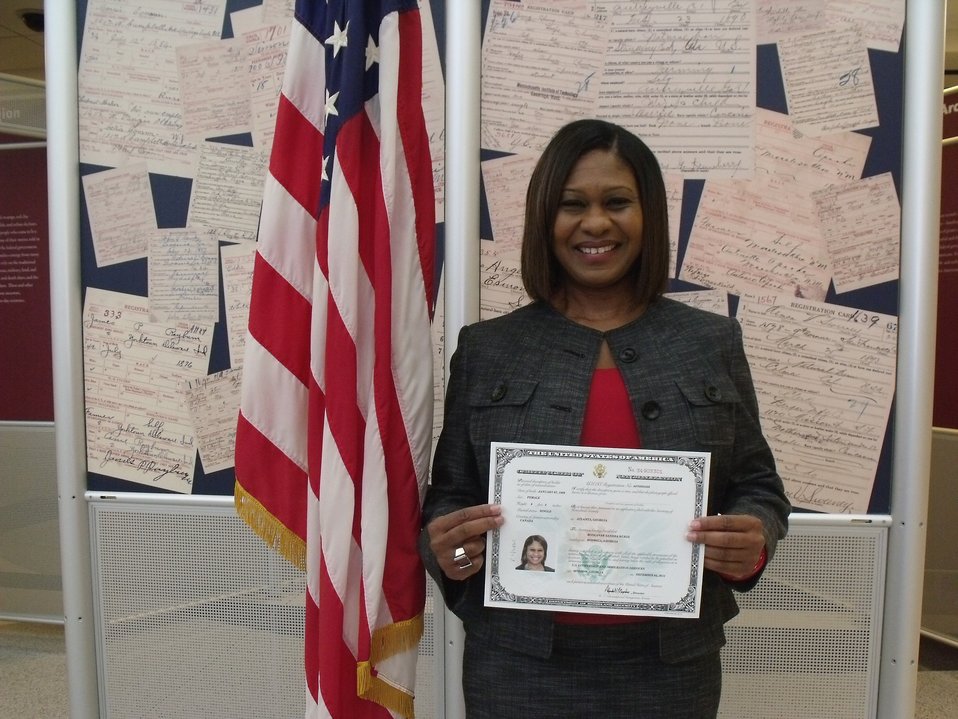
New Citizens